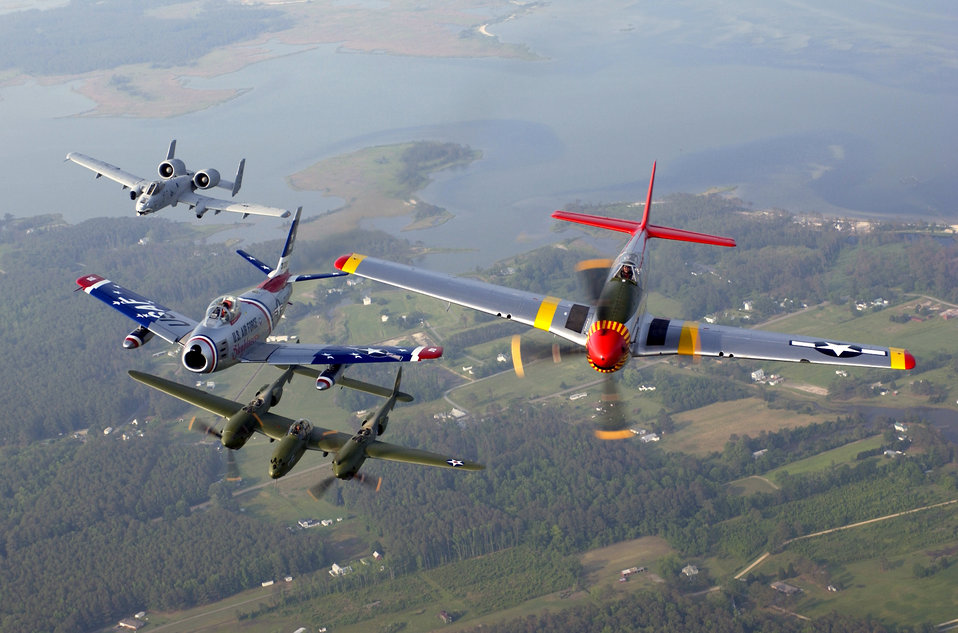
Air power demonstration

OVER VIRGINA -- (From left) An A-10 Thunderbolt II, F-86 Sabre, P-38 Lightning and P-51 Mustang fly in a heritage flight formation during an air show at Langley Air Force Base, Va., on May 21. The formation displayed four generations of Air Force fighters.